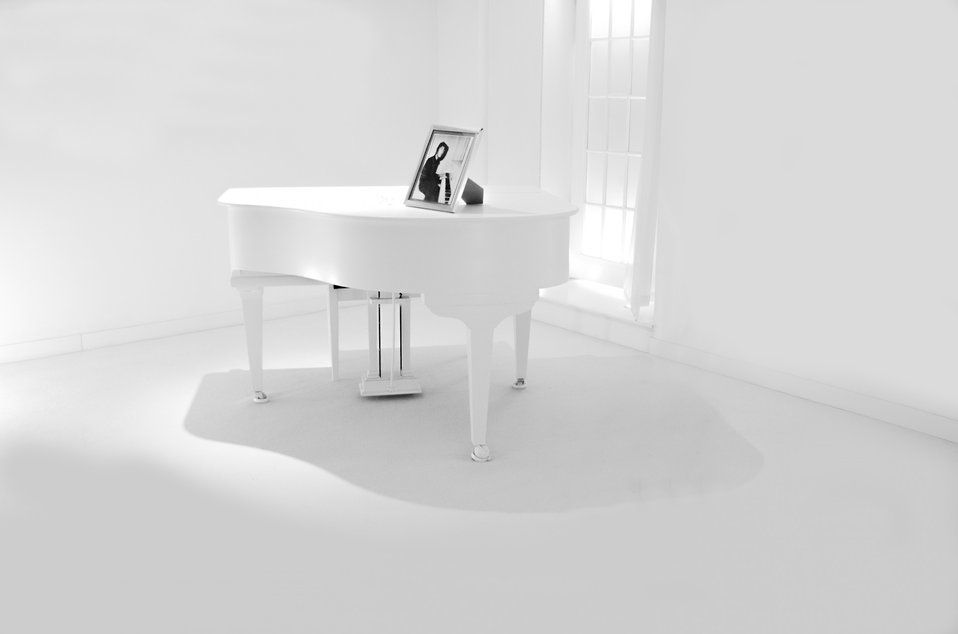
White piano

White classic grand piano.